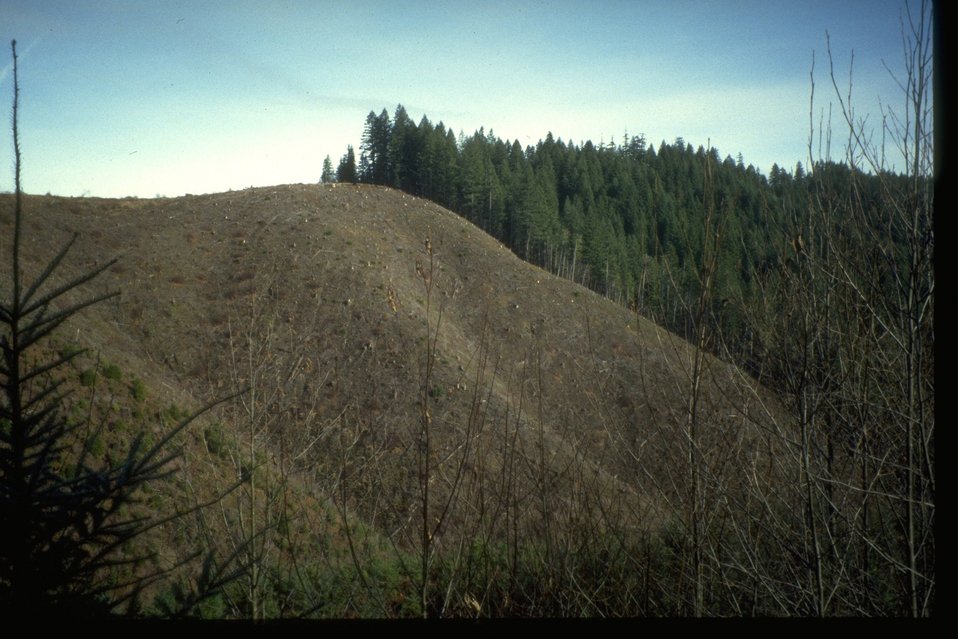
Clearcut site in Western Oregon.